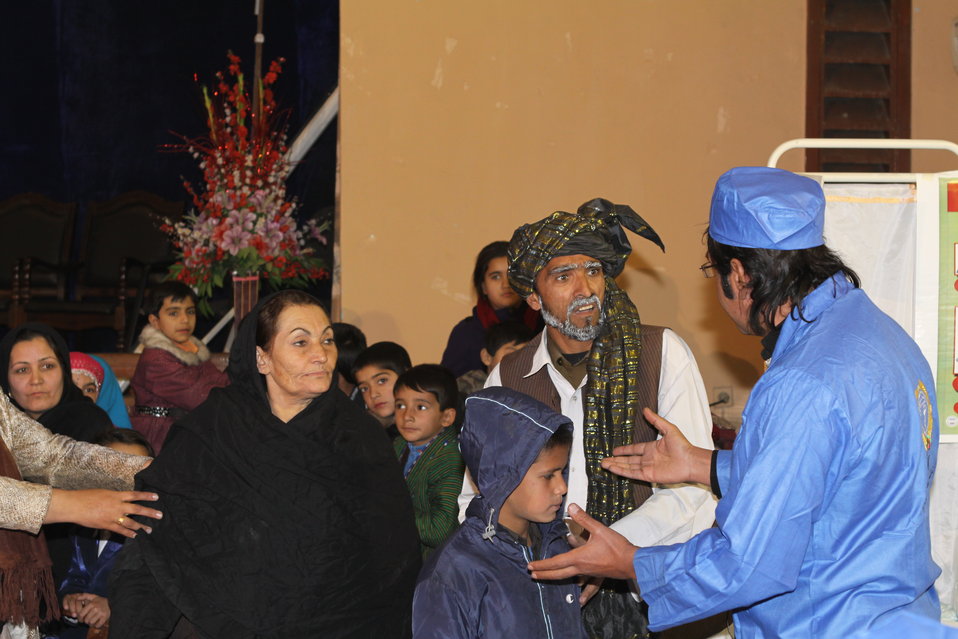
Community Health Workers Celebrated

Kabul, Afghanistan | December 5, 2010 — In support of the United Nations designated International Volunteer Day for Economic and Social Development, Afghanistan’s Ministry of Public Health celebrated its annual Community Health Worker Day today. Acting Minister of Public Health Dr. Suraya Dalil, USAID Senior Deputy Mission Director Robert Hellyer, other government officials, and international donors joined in recognizing the critical contribution of community health workers in Afghanistan and encouraging them to continue their voluntary support to their communities.
The event praised the contributions of the more than 22,000 volunteers throughout the country who deliver community level health-education, counseling, and services out of village health posts located in private homes. The Ministry of Public Health envisioned that community-based healthcare programs will actively encourage communities and families to adopt healthy lifestyles and behaviors, and provide families access to high quality and socially acceptable preventative medicine and life-saving services.
“We have 22,000 community health workers in Afghanistan that are able to implement the basic and standard medicines. They all have been trained through a job description,” said Minister Dalil. Addressing the health workers, she added, “I am proud and feel powerful that I have people like you.”
USAID-funded health projects collaborate closely with the Ministry of Public Health to improve the health and nutritional status of Afghans, provide quality primary healthcare, and promote healthy behaviors at the community and household-levels. USAID supported the training of more than 9,000 of the volunteer community health workers currently working in Afghanistan.
“On behalf of the American people, I congratulate the Community Health Workers for their diligence to gain the skills and knowledge necessary to serve their communities in this important role,” said USAID Senior Deputy Mission Director Hellyer. “USAID strongly supports community based health care and believes that quality community-based health services are essential to reaching Afghanistan’s Millennium Development Goals.”
To support the Basic Package of Health Services, USAID assisted in developing the community health worker training manual, helped train community health worker supervisors and master-trainers, facilitated in-service training, and produced and developed reporting tools, job aids, and education materials.